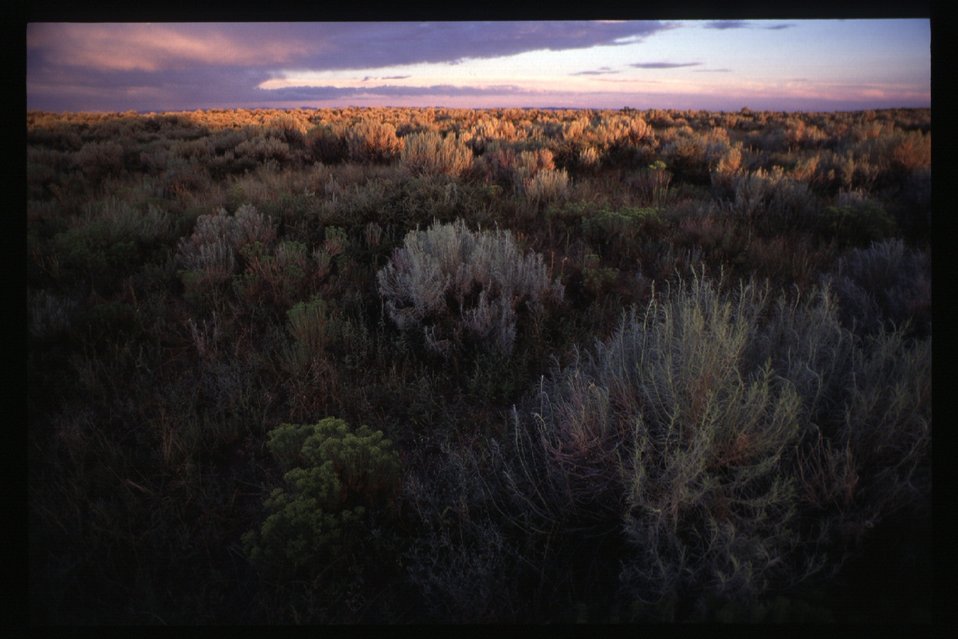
Recreation St Anthony Sand Dunes overview Idaho Falls Field Office USRD Upper Snake River District